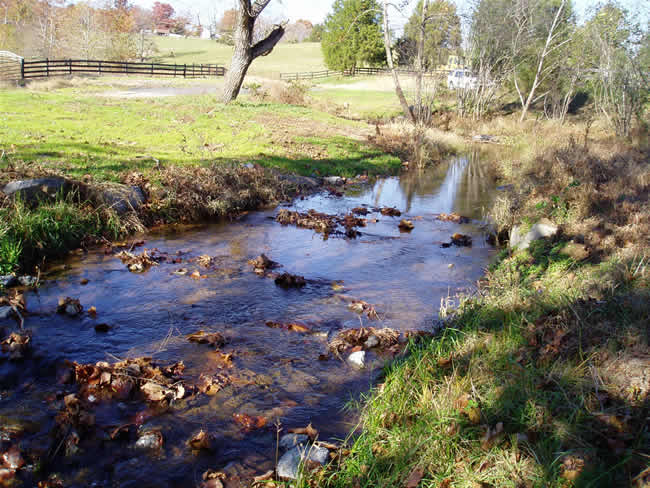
Beaver Run Stream Restoration Project Cross-vane Structure

A cross-vane (2-7% slope) has a vane on each side which covers 1/3 of the bankfull width and the invert portion covers the middle 1/3. They are commonly used for grade-control and to reduce nearbank stress by redirecting flow through the center of the channel. It can also considered a habitat improvement structure.